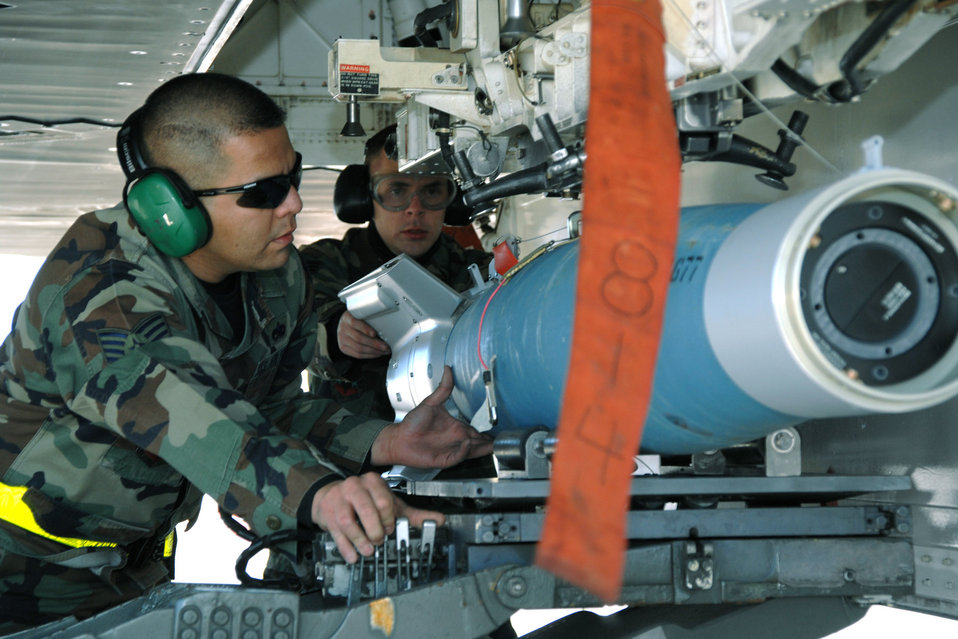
Holloman weapon loaders compete for last time on F-117

Staff Sgt. Alberto Vazquez and Senior Airman Adam Evans load a guided bomb unit-12 during the F-117 Nighthawk Weapons Load Crew of the Year Competition Jan. 18 at Holloman Air Force Base, N.M. Seargent Vazquez, Airman Evans and teammate, Airman 1st Class Ray Wornat, represented the 8th Aircraft Maintenance Unit during the competition.